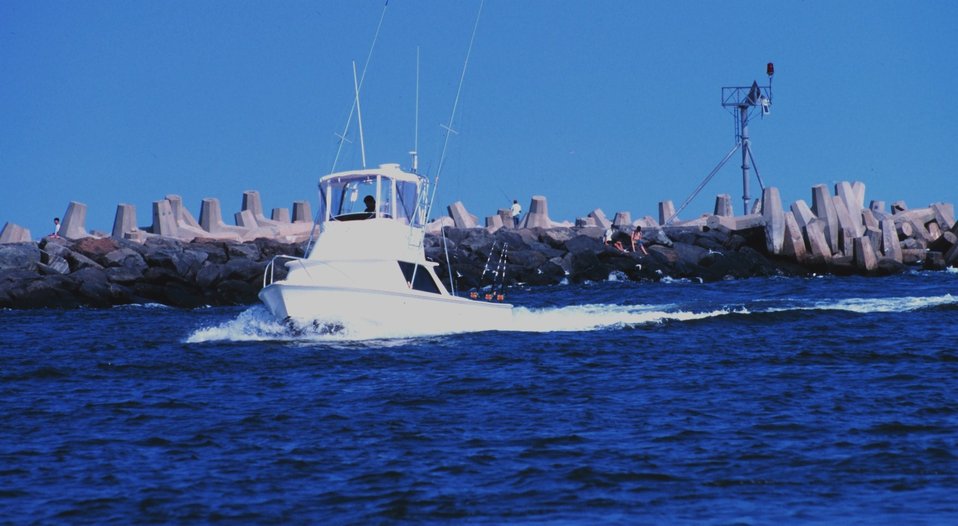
A recreational fishing boat passing the jetties at Manasquan Inlet